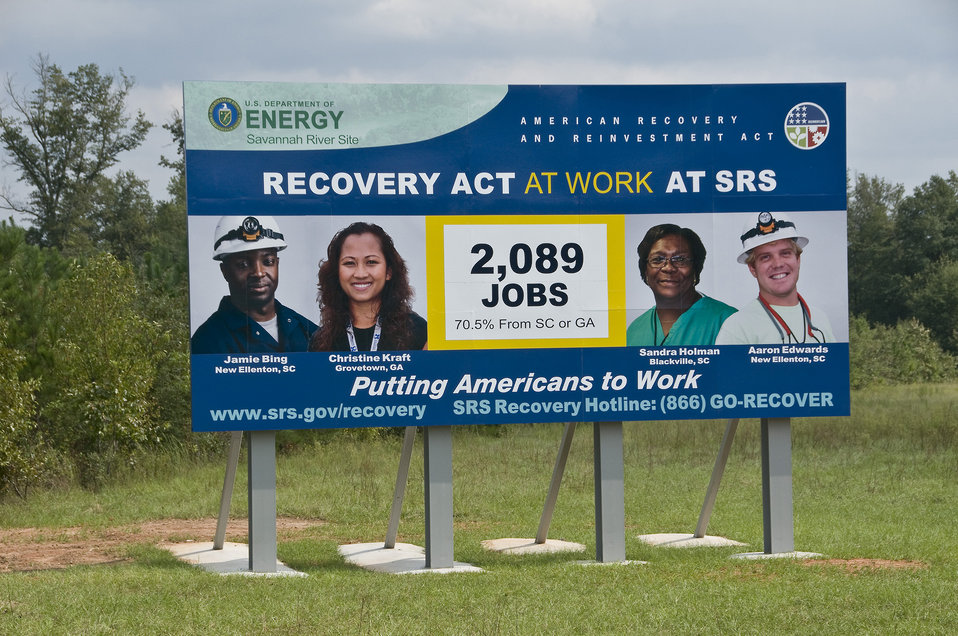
Jobs by the 1000s

At the Savannah River Site, the job numbers keep rising.